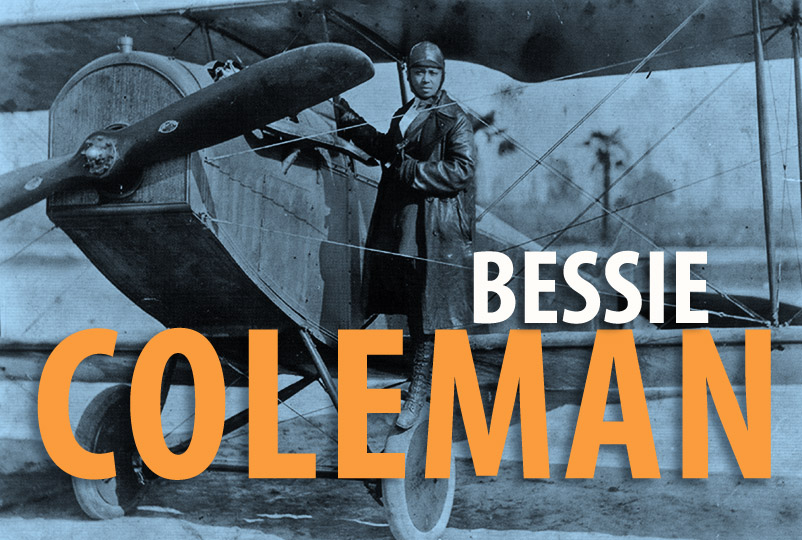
Bessie Coleman